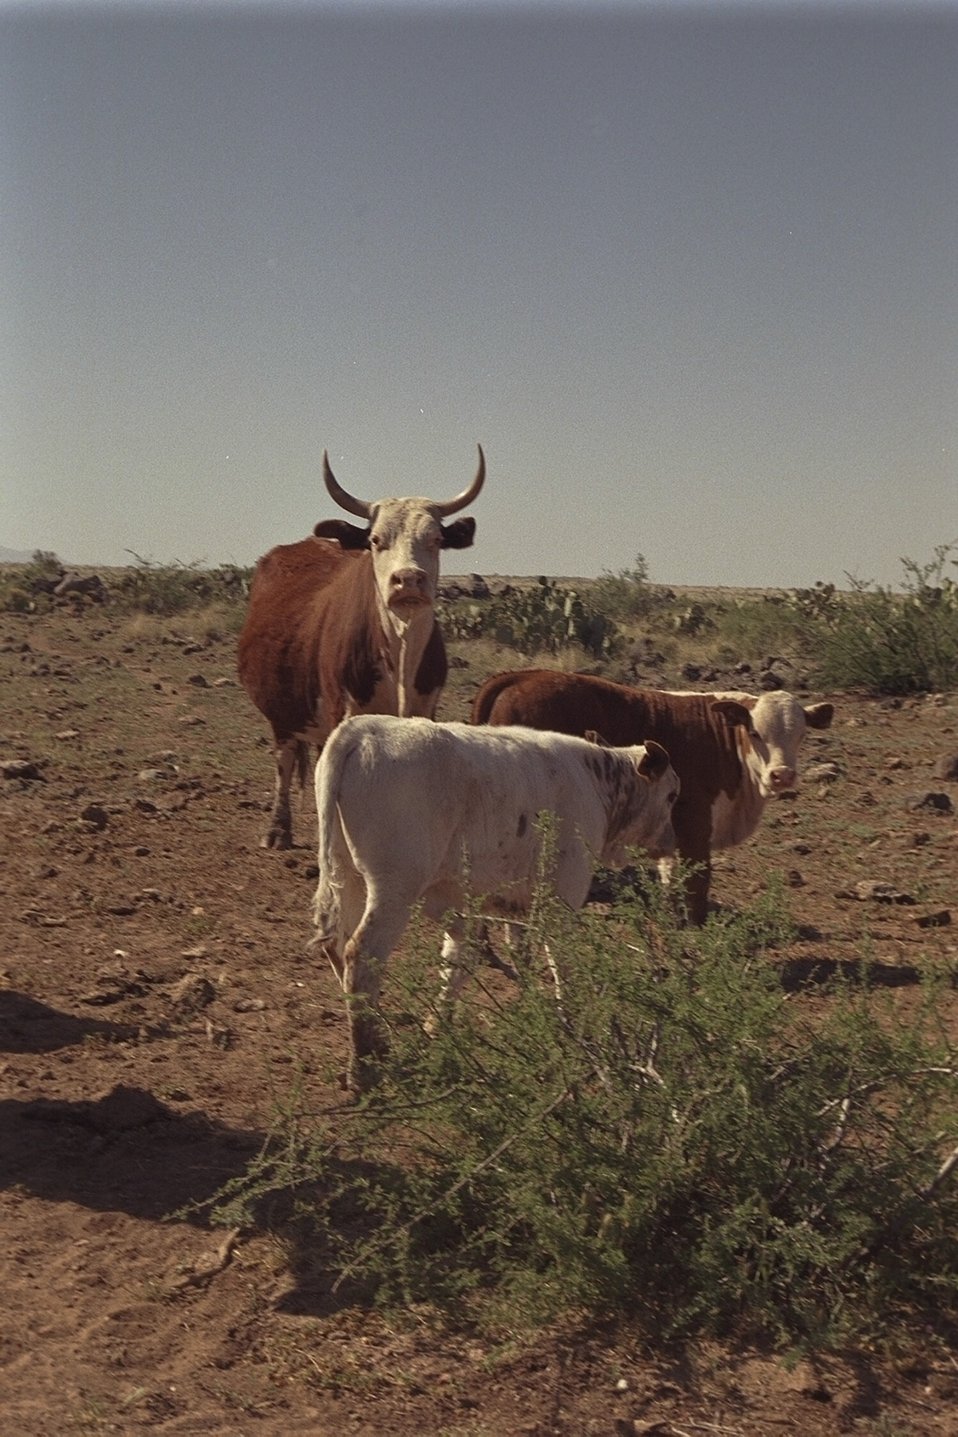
Moo!! Cattle on the Agua Fria National Monument.